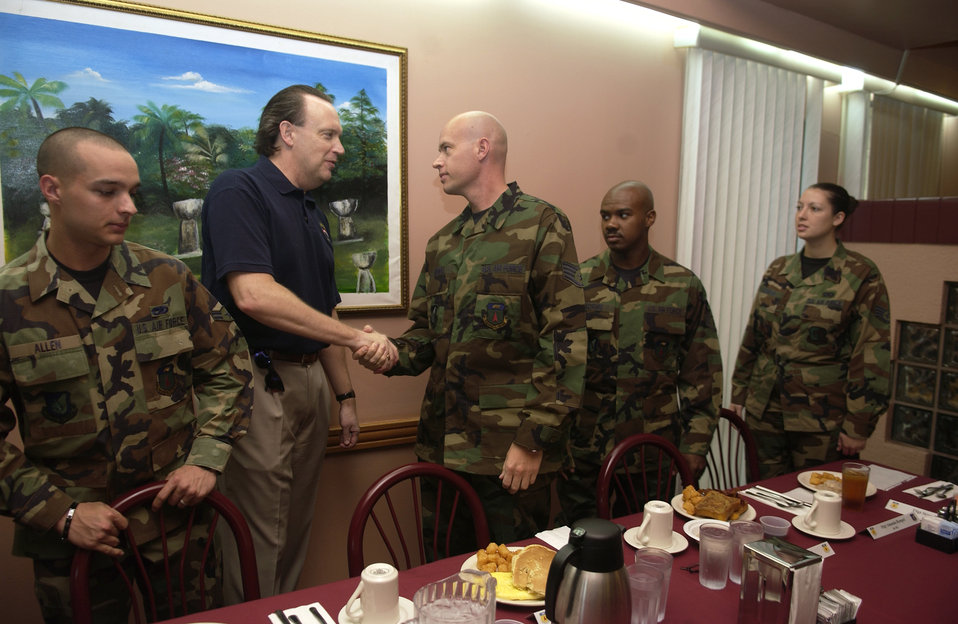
Service secretaries visit Guam to analyze joint basing status

William C. Anderson shares breakfast with several Airmen Jan. 20 during his visit to Andersen Air Force Base, Guam. As assistant secretary of the Air Force, Mr. Anderson heads three division departments that deal at the policy level with Air Force facility and logistical issues. The department's responsibilities include installations, military construction, base closure and realignment; environment, safety and occupational health issues; and all logistical matters.